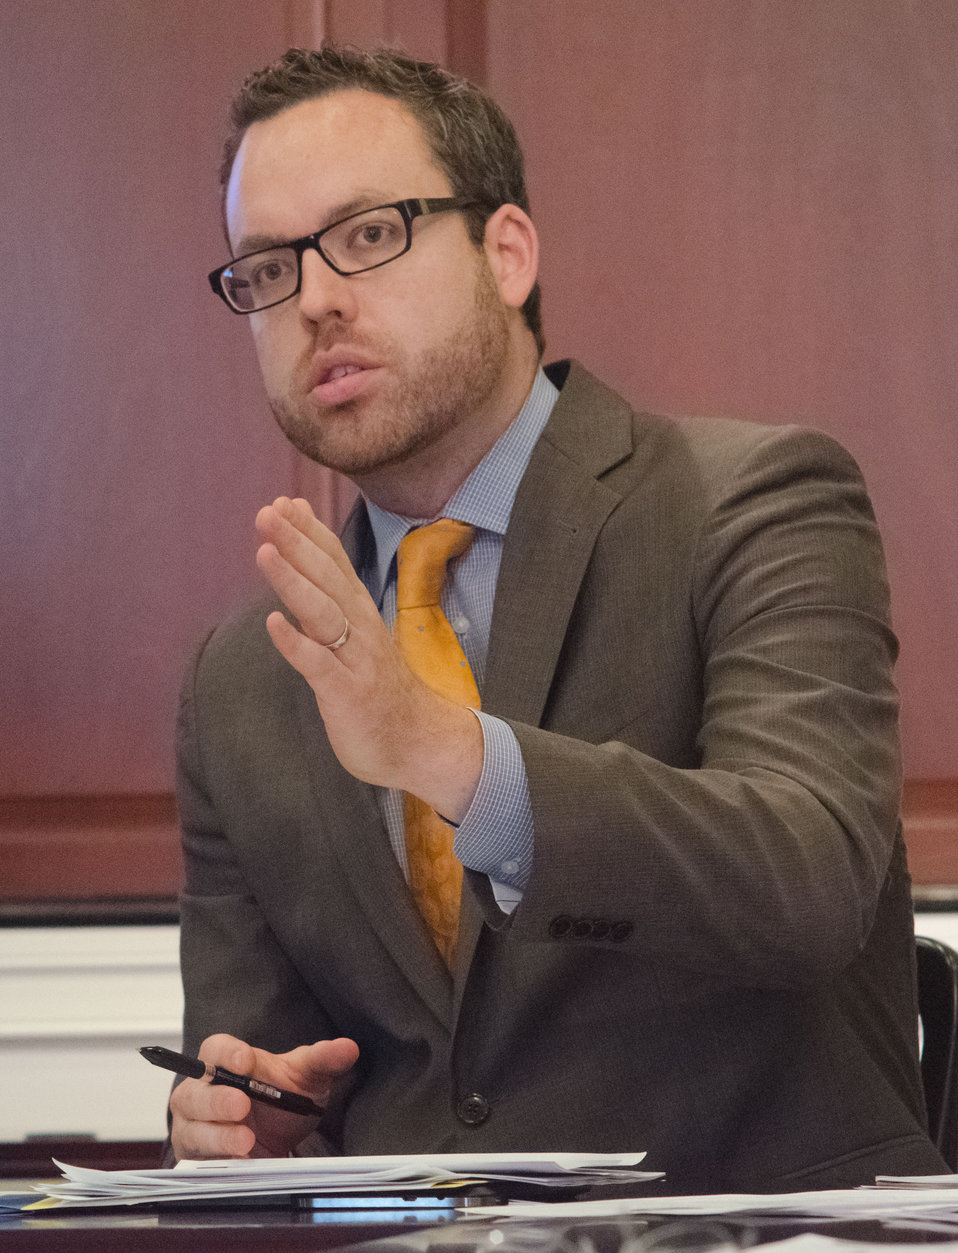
Interior Bureau of Land Management Acting Deputy Director of Programs and Policy Neil Kornze speaks during the White House Rural Council chaired by Agriculture Secretary Tom Vilsack at the White House in Washington, D.C. on Friday, Oct. 5, 2012. The White House Rural Council discusses recent White House announcements and Secretary Vilsack asked council members to outline their work plan for the coming months.